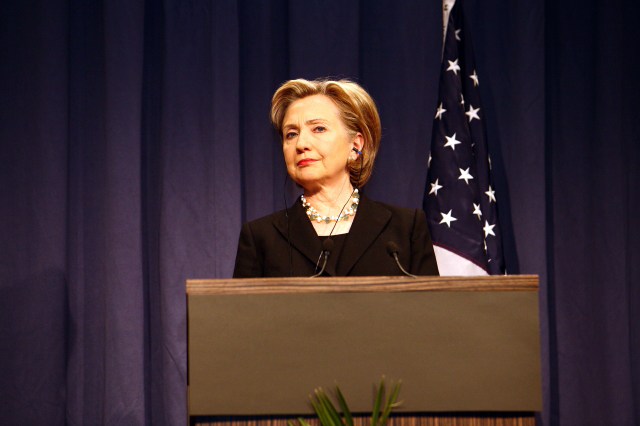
Press Conference With Russian Foreign Minister

Press conference after dinner meeting between U.S. Secretary of State Hillary Rodham Clinton and Russian Foreign Minister Sergey Lavrov in Geneva, Switzerland March 6, 2009.